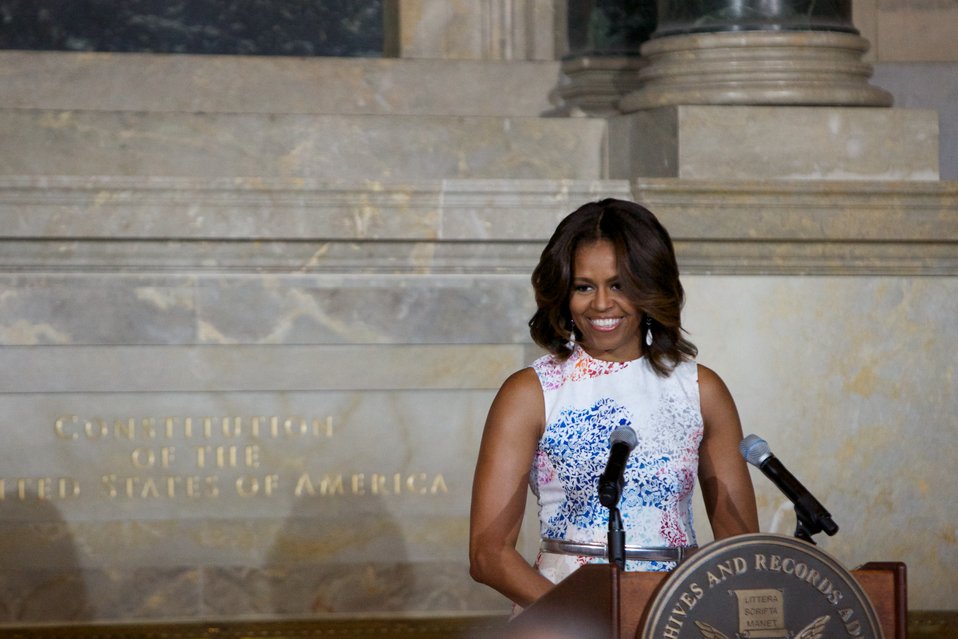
Naturalization Ceremony with Michelle Obama